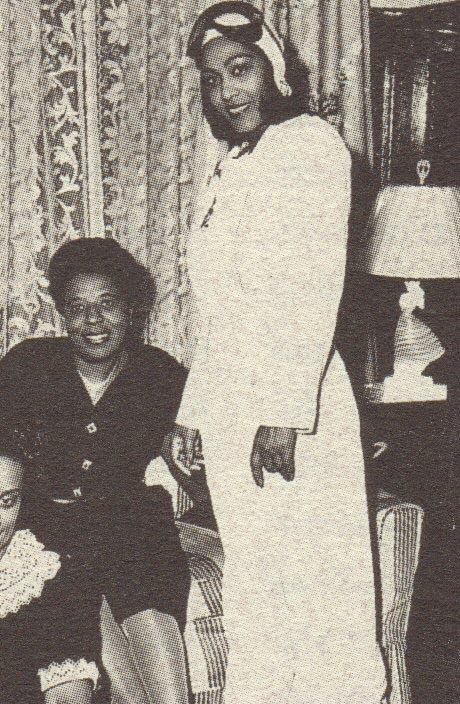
Janet Bragg: Fought racism during early days of aviation.